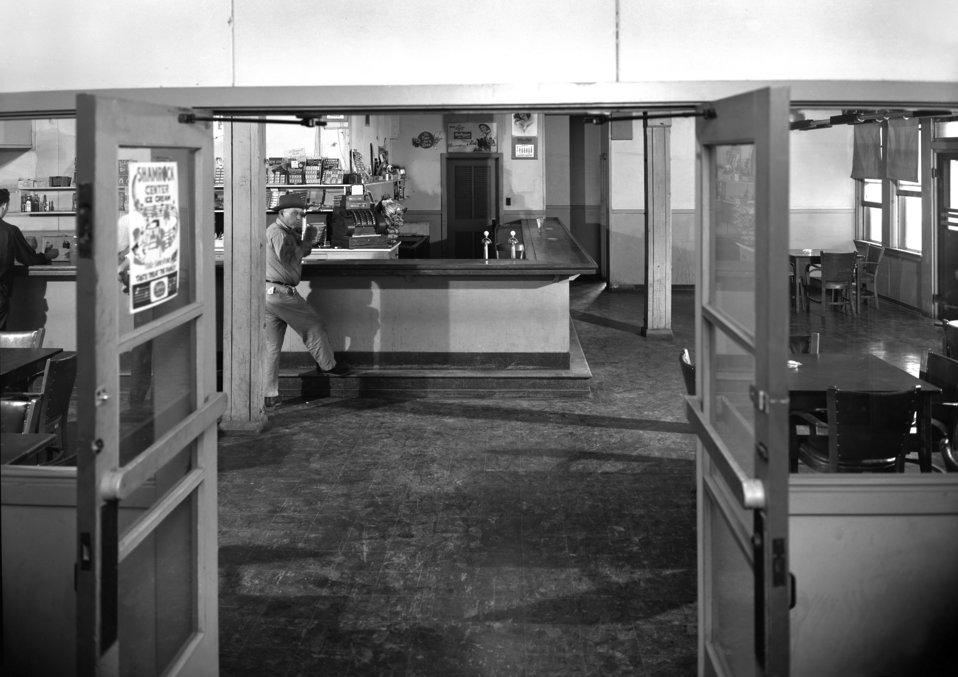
Grove Hall Interior Oak Ridge 1948

DOE photo Ed Westcott 5-24-1948 Oak Ridge Tennessee